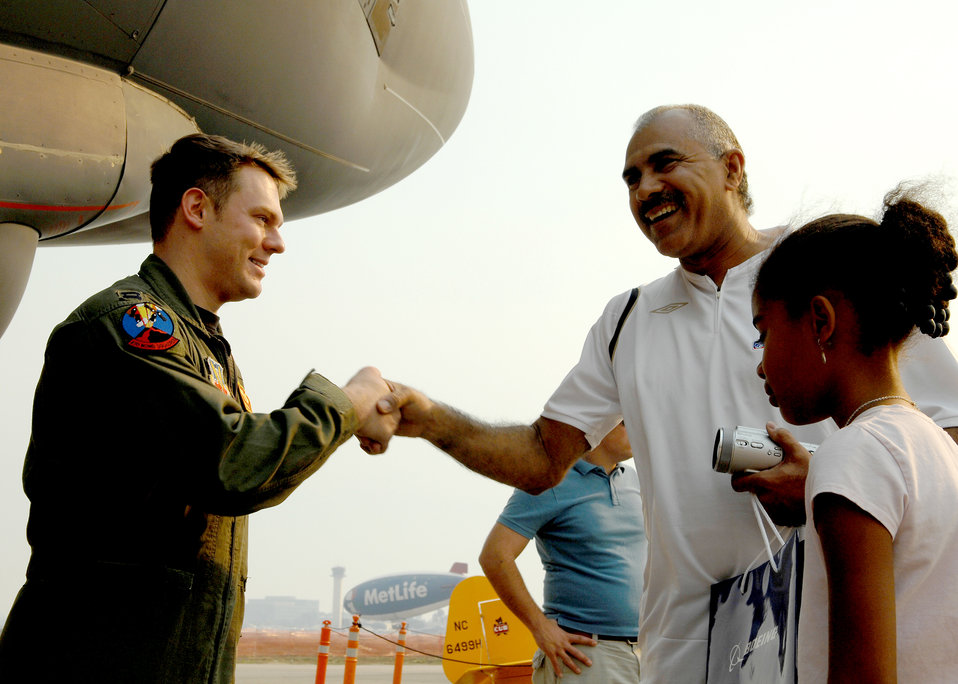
Wings over Long Beach

Capt. Mark Pindar greets Ray Ransom from La Palma, Calif., and his daughter, Deja, during the Wings Over Long Beach airshow Nov. 15 at Long Beach Airport, Calif. The airshow was part of Air Force Week Los Angeles to showcase the Air Force, its people and the mission throughout the region. Captain Pindar is a B-52 Stratofortress pilot with the 23rd Bomb Squadron from Minot Air Force Base, N.D.